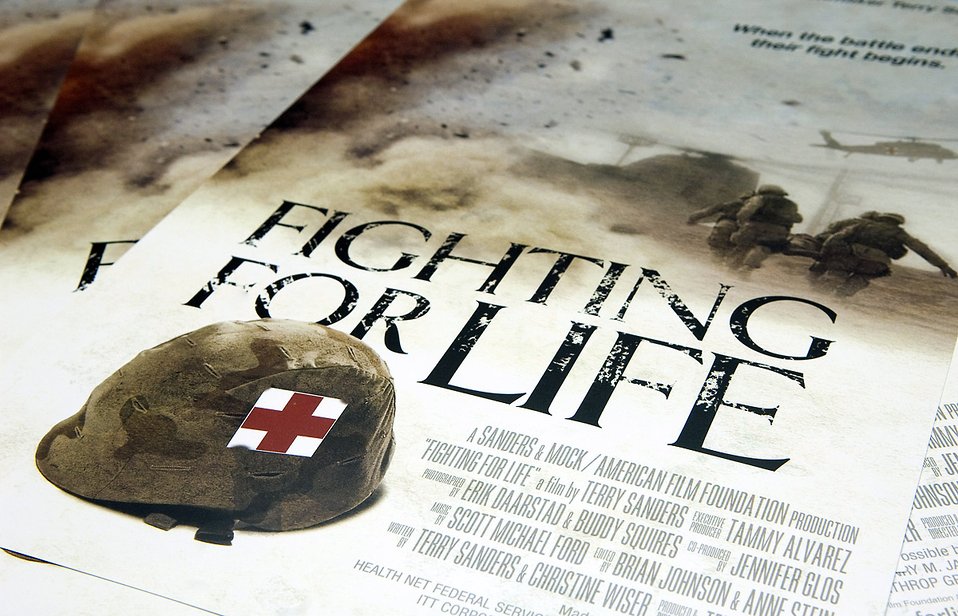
Presentation of 'Fighting for Life' documentary

Film Director, Terry Sanders, a two-time Academy Award winner, premiered his film 'Fighting for Life' to nearly 300 Air Force Airmen and city civic leaders during Air Force Week - Philadelphia May 28. The film is a feature documentary telling the stories of doctors and nurses fighting on the front lines of battle to save lives. The Air Force Week program is part of a proactive initiative to increase communication with the public. Air Force Week includes community visits and talks by Air Force officials, flight demonstration team performances and displays highlighting the Air Force men and women serving on the front lines.